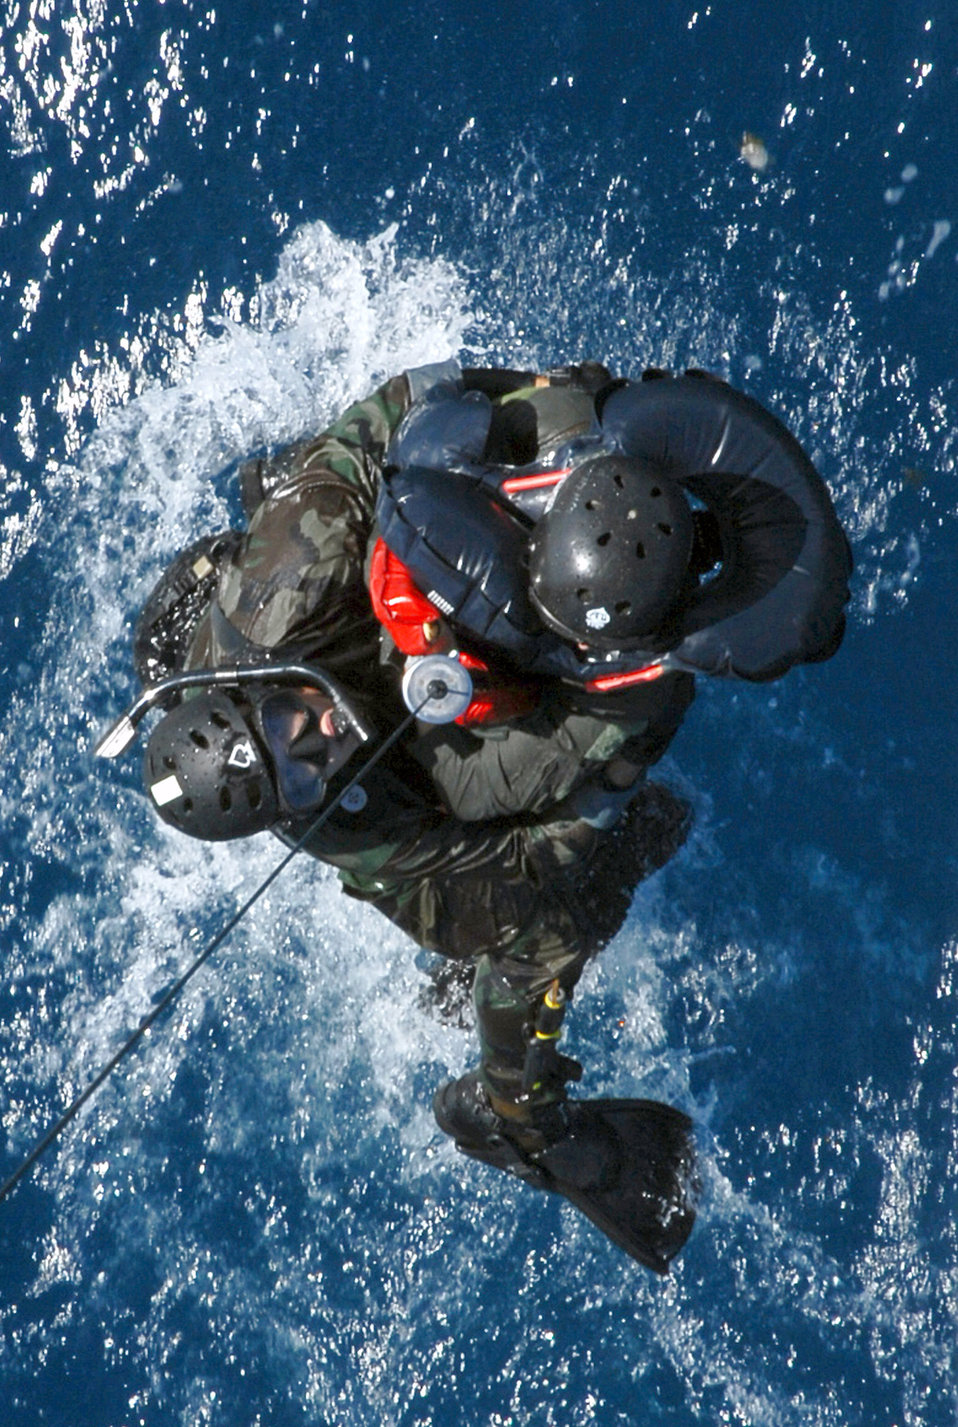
To the rescue

Senior Airman Oliver Smith and a downed F-15 Eagle pilot are hoisted out of the water into a HH-60G Pave Hawk during a crisis management exercise Oct. 8 off the coast of Okinawa, Japan. Members of the 18th Wing from Kadena Air Base, Japan, and the Japanese coast guard rehearsed response procedures for a simulated over the water aircraft accident. Airman Smith is a pararescue Airman assigned to the 31st Rescue Squadron.